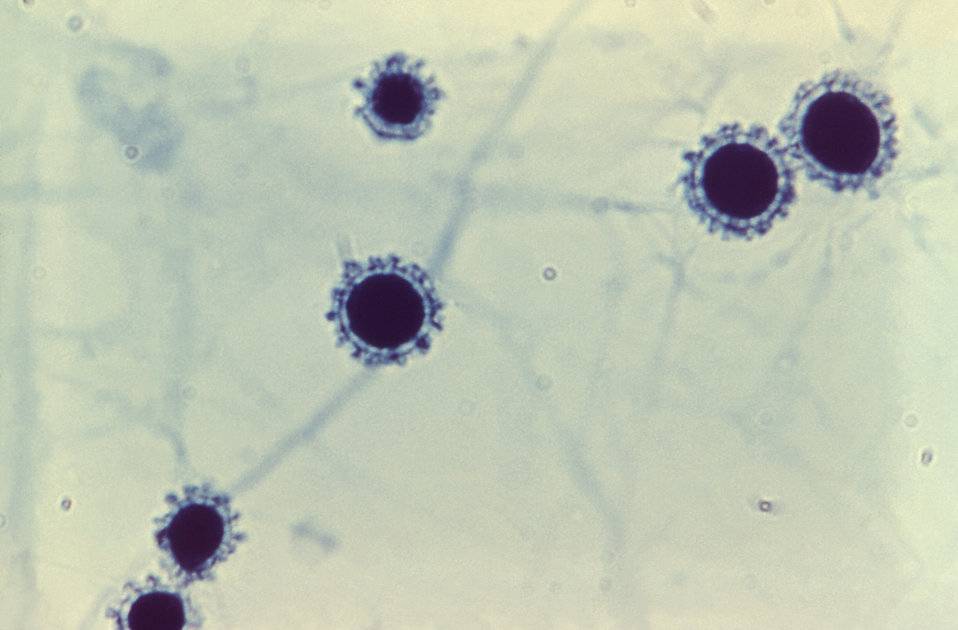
Under a high magnification of 1200x, this photomicrograph reveals a number of tuberculate spores of a Sepedonium sp. fungal organism. Note the filamentous hyphae in the background.